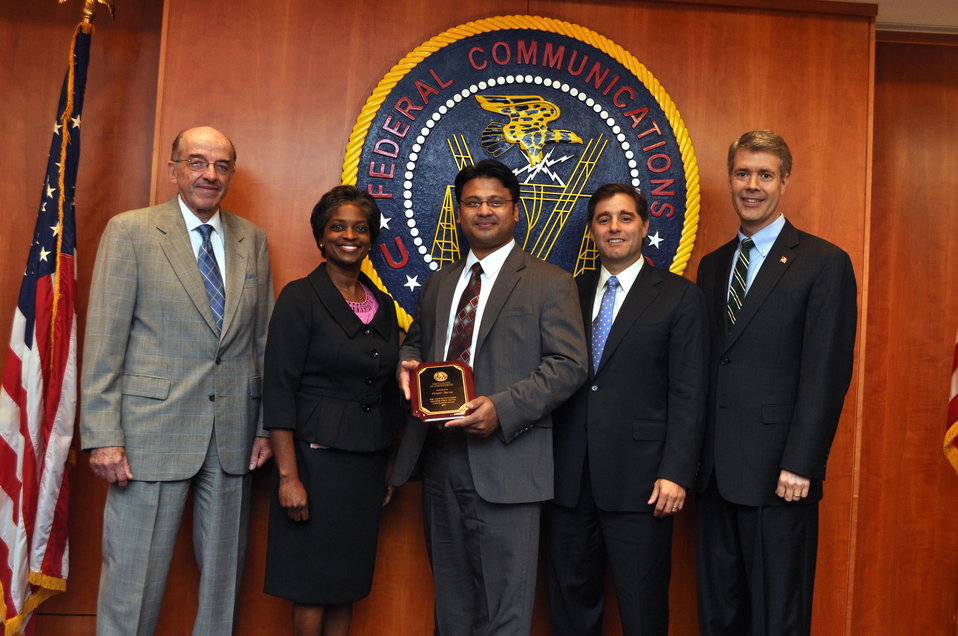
Engineers and Economists

At the August, 2011 Open Meeting the FCC recognized engineers and economists.